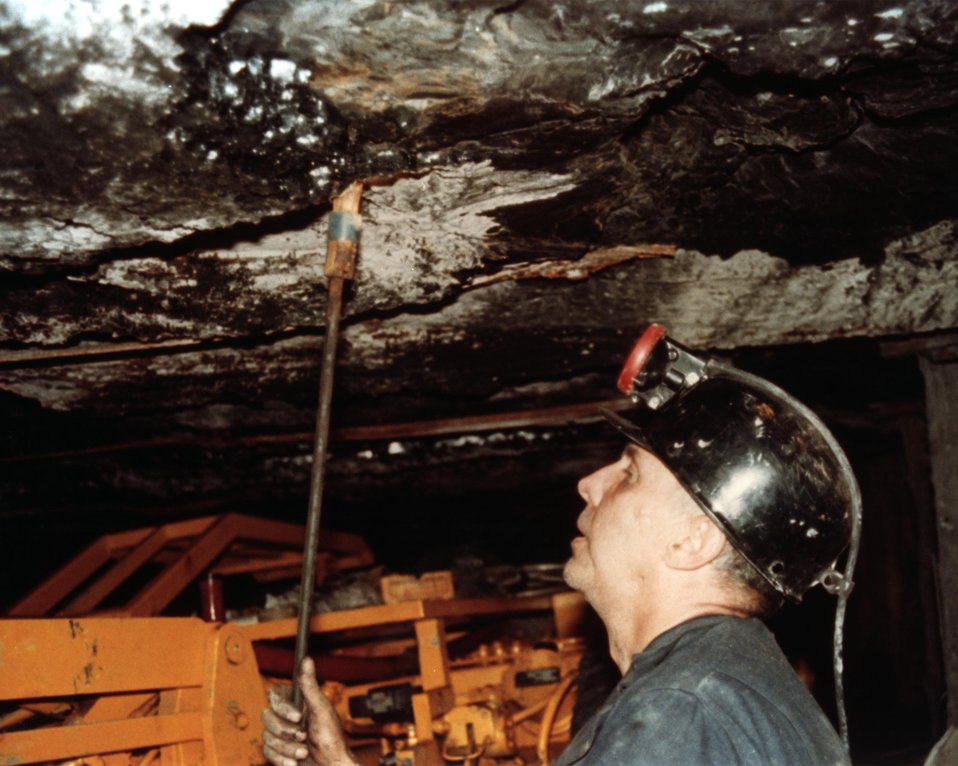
ROOF BOLT BEING INSTALLED (UNDERGROUND).

THE PREDOMINANT UNDERGROUND MINING METHOD IN THE U.S. IS THE 'ROOM AND PILLAR' METHOD, A TERM DERIVED FROM THE MINING PATTERN OF A SERIES OF EXCAVATED AREAS (ROOMS) AND UNEX- CAVATED AREAS (PILLARS) WHICH ARE LEFT TO SUPPORT THE ROOF. A MAJOR INCREASE IN PRODUCTION AND EFFICIENCY COULD BE ACHIEVED BY INTEGRATING THE ROOF SUPPORT AND EXTRACTION FUNCTION.